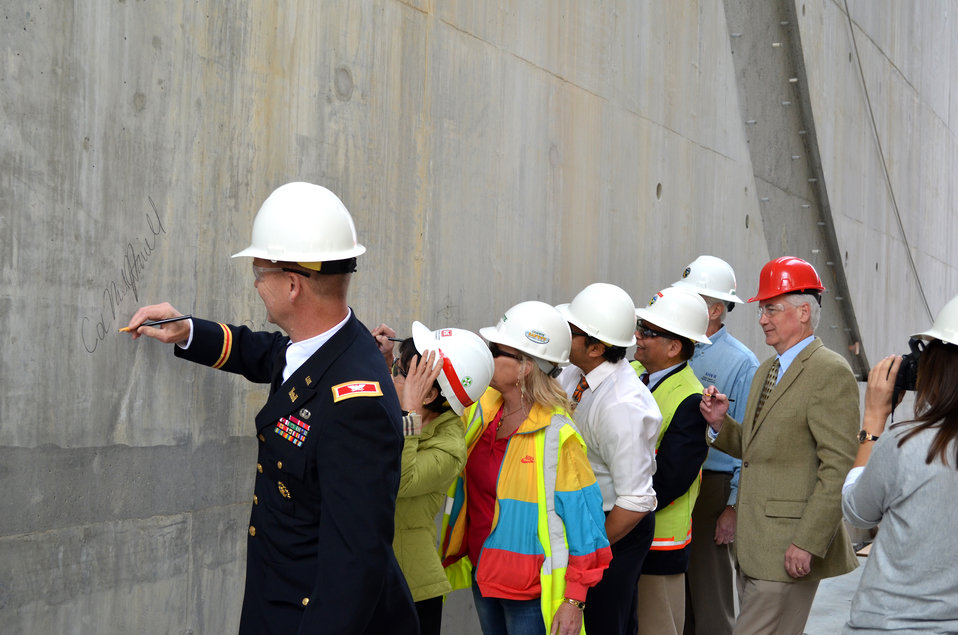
Corps hosts elected officials, partners to celebrate progress on Folsom spillway

(From left) U.S. Army Corps of Engineers Sacramento District commander Col. Michael Farrell, Rep. Doris Matsui, Folsom Mayor Kerri Howell, Rep. Ami Bera, Central Valley Flood Protection Board executive officer Jay Punia, Department of Water Resources director Mark Cowin and Rep. Tom McClintock sign their name on the wall of the new auxiliary dam at Folsom Dam in Folsom Calif., during a media event and site tour April 26, 2014. Elected officials joined the Corps and project partners to celebrate the transition from concrete placement to gate installation, which will begin later this summer. The auxiliary dam is scheduled to be constructed by April 2015, and the entire auxiliary spillway project is expected to be wrapped up by October 2017.